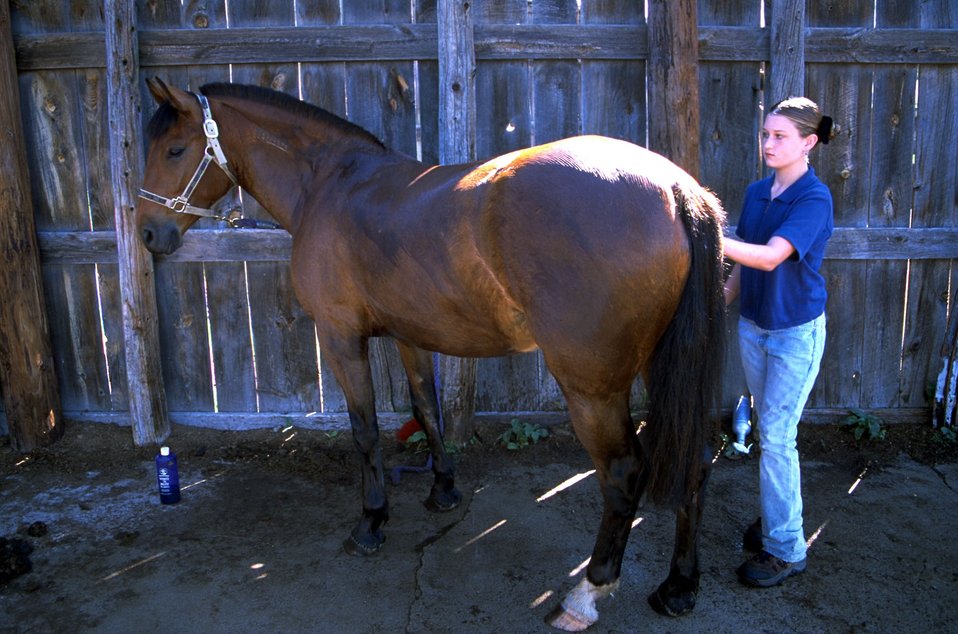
Grooming an Adopted Horse